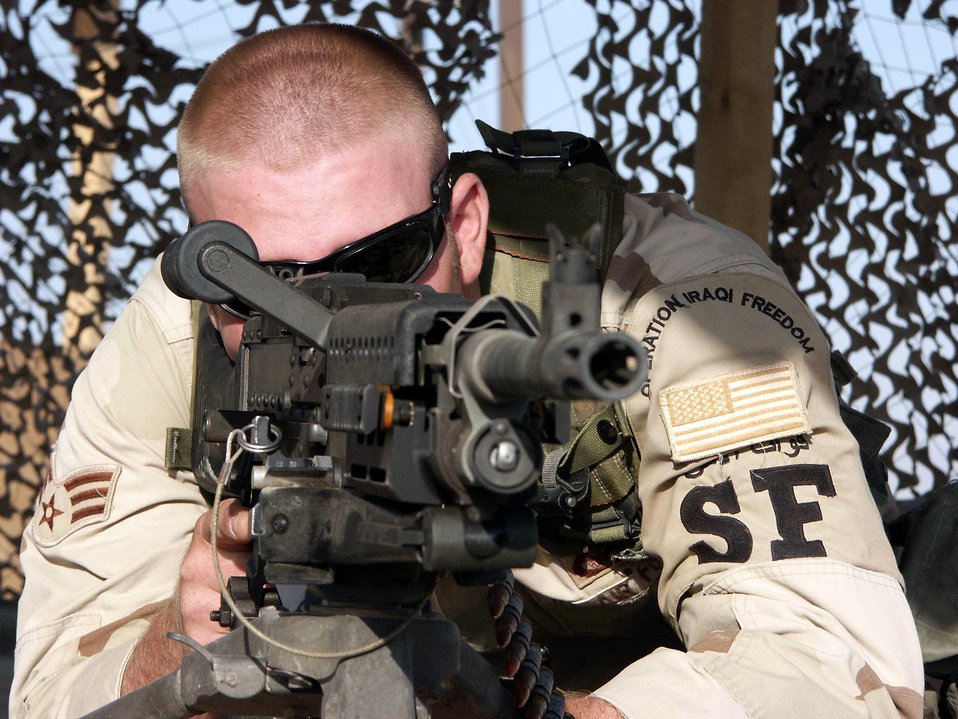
Target aquired

TALLIL AIR BASE, Iraq -- Senior Airman Christopher Bounds gets a bead on a target while manning his post here. He and other airmen of the 822nd Security Forces Squadron are returning home after serving more than five months supporting Operation Iraqi Freedom.